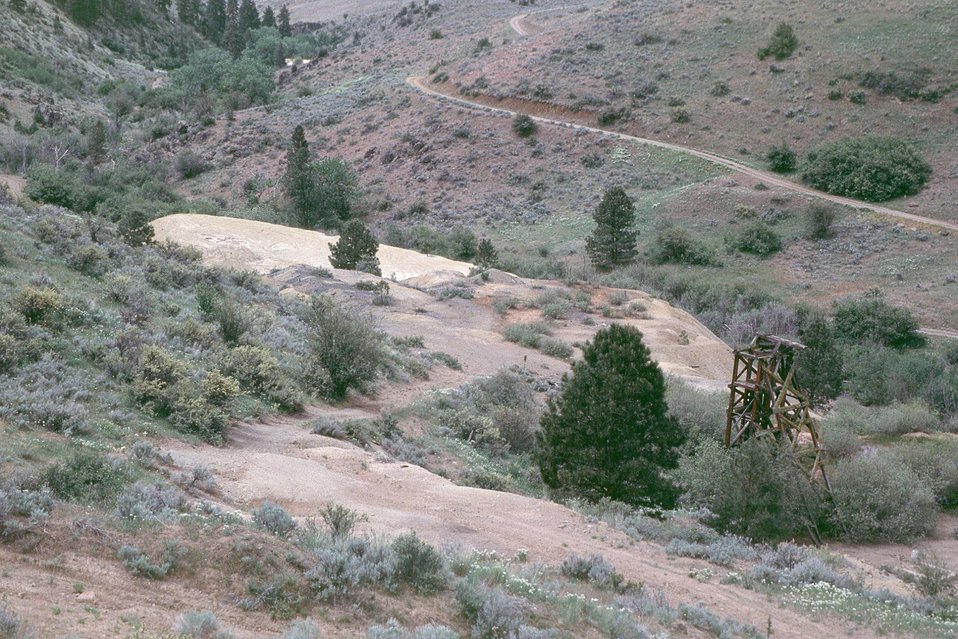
AML Poorman, Vale District, Oregon. Repository.